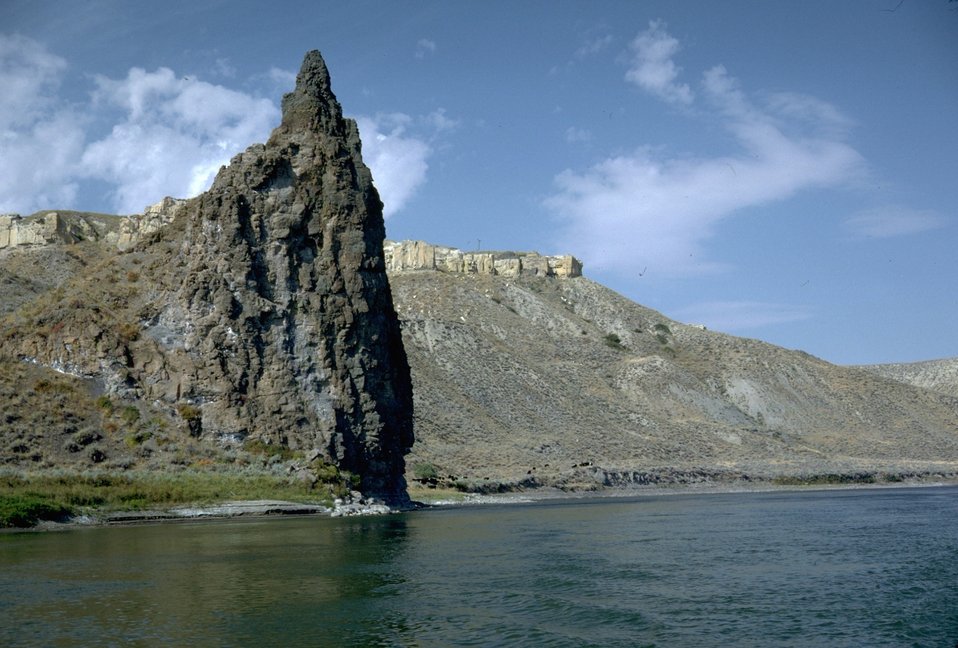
Missouri River